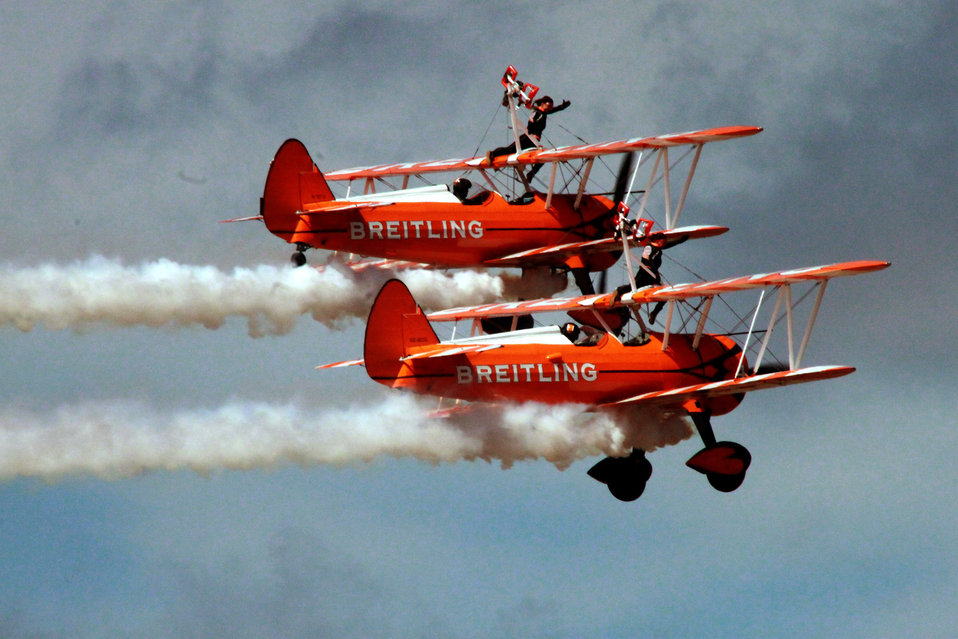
Wing walking

Bi planes with wing walkers.